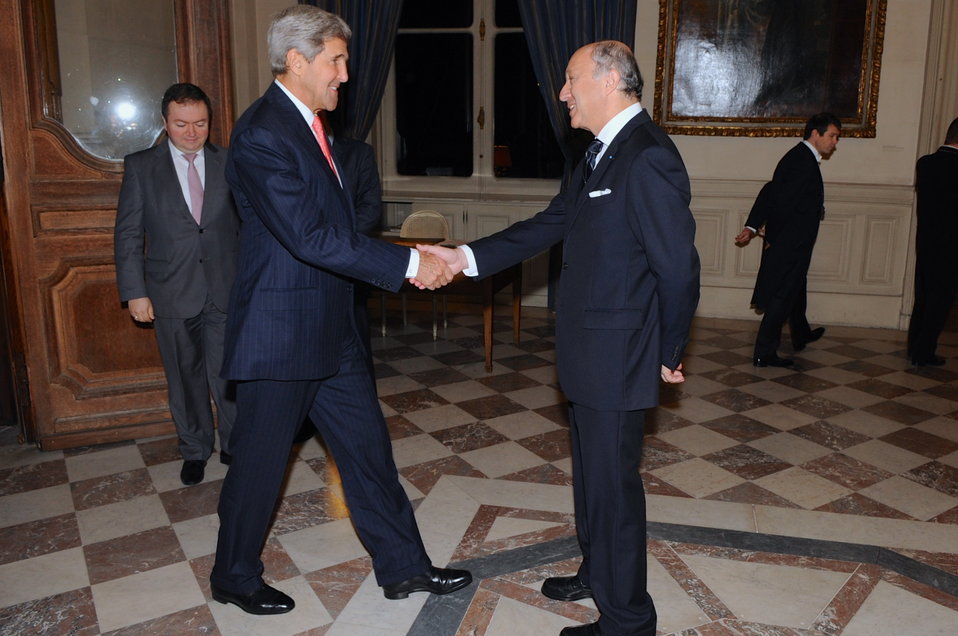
Secretary Kerry Meets With French Foreign Minister Fabius

U.S. Secretary of State John Kerry meet with French Foreign Minister Laurent Fabius upon his arrival at the Ministry of Foreign Affairs in Paris, France on October 22, 2013.